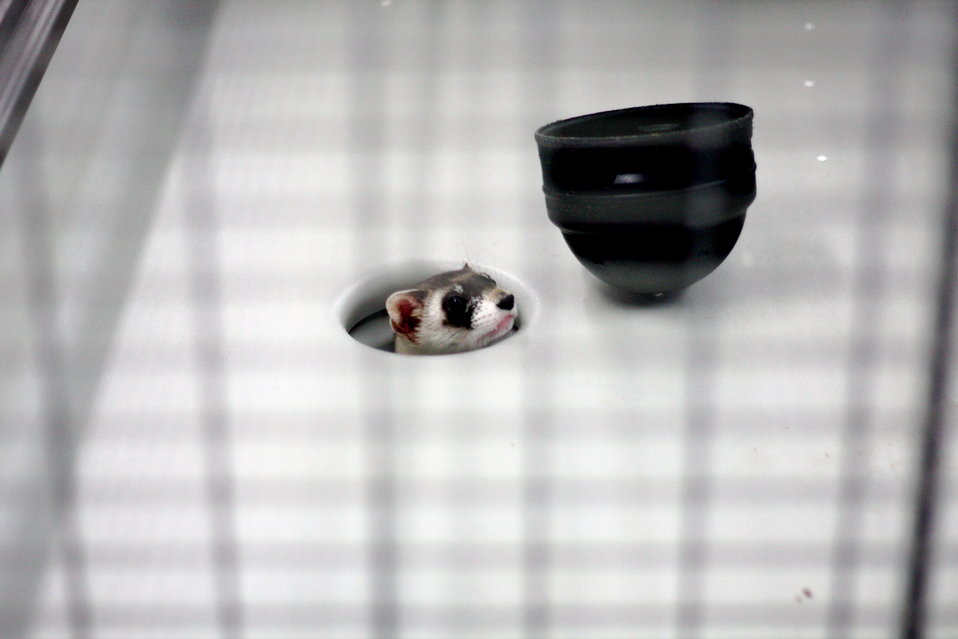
Interns visit the NBFFCC

In the summer of 2012, USFWS Region 6 interns visited the National Black-footed Ferret Conservation Center (NBFFCC) in Colorado to learn how the program reintroduces the endangered Black-footed ferret back into its native habitat.